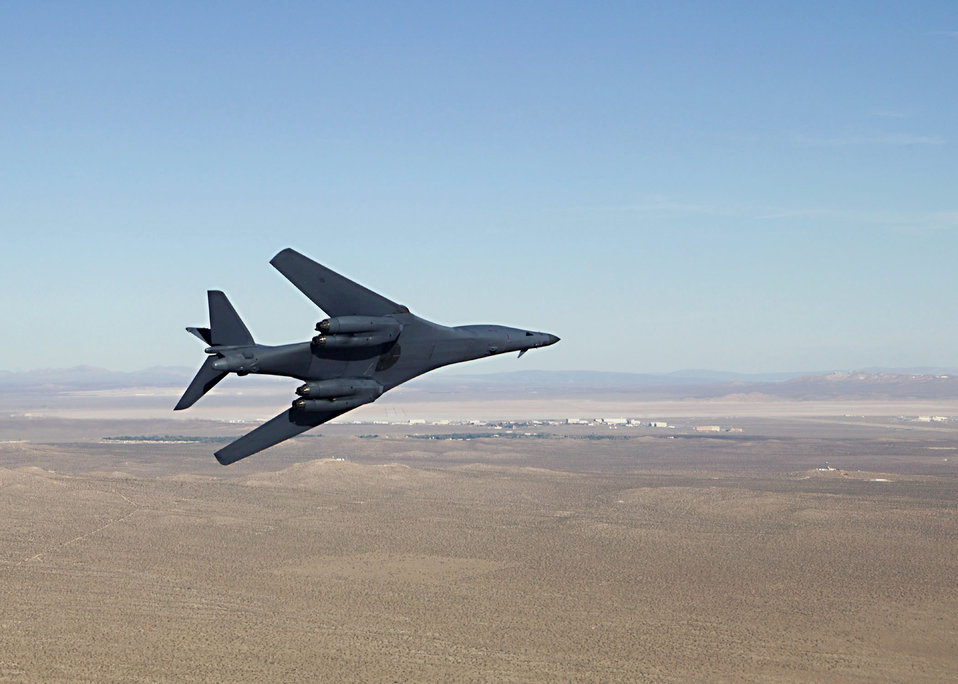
Breaking records

EDWARDS AIR FORCE BASE, Calif. -- A B-1B Lancer here flies overhead during the Edwards Air Force Base Open House and Air Show. The B-1B unofficially set and broke almost 50 new world speed records during the air show Oct. 25 and 26. Record-breaking courses included three 15-, 25-, 100-, 500- and 1,000-kilometer speed dashes. National Aeronautic Association officials still need to verify the results, before they become official. The NAA is the national authority in overseeing and certifying aviation records.